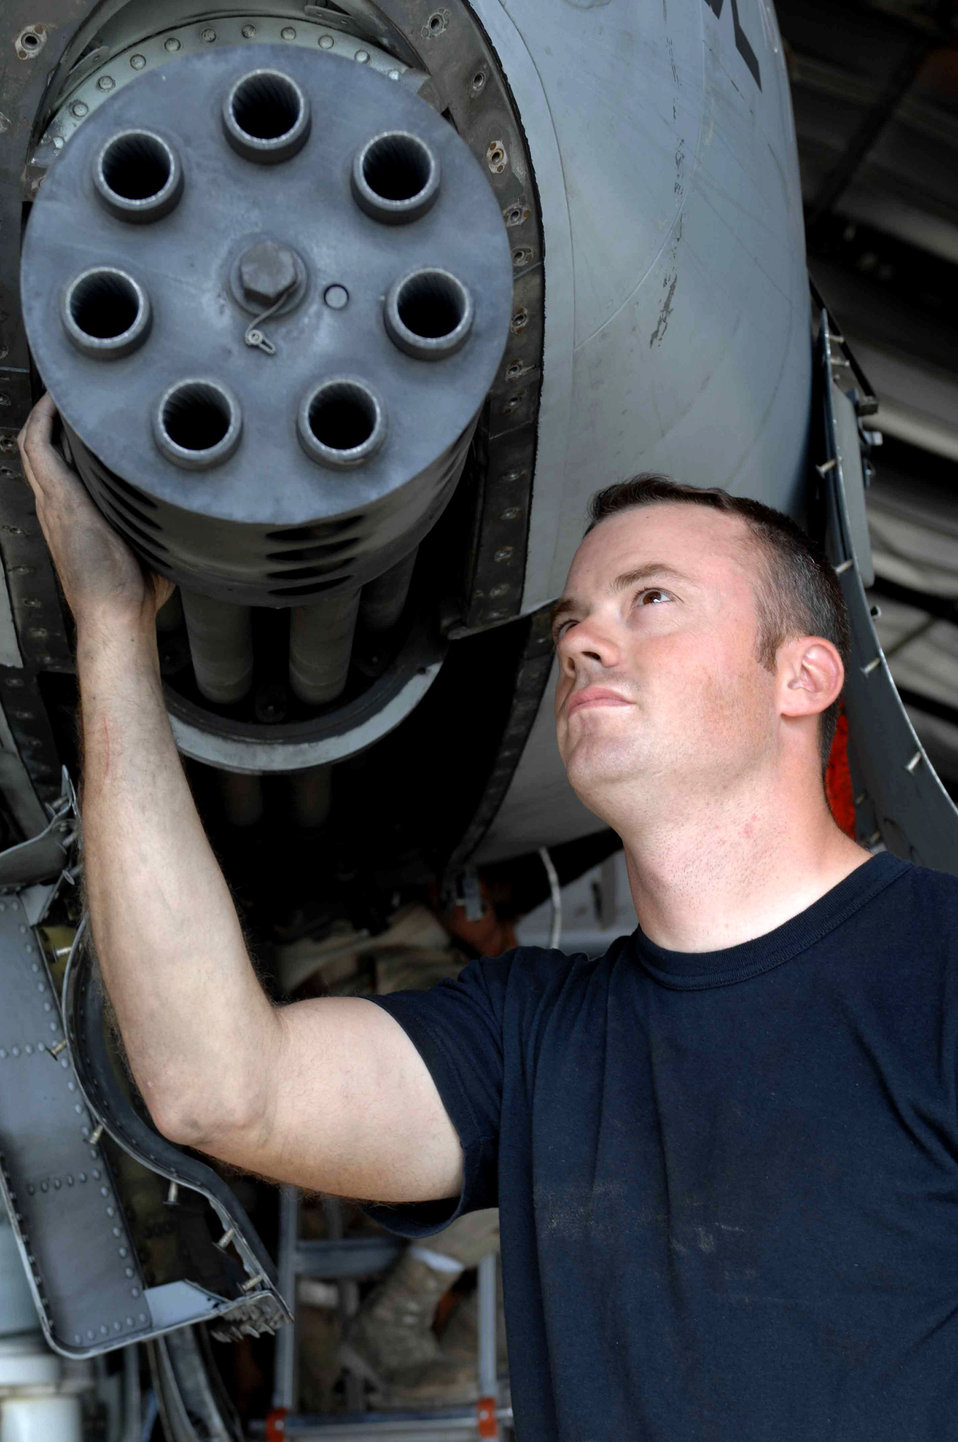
Maintenance check

Staff Sgt. Steven Means performs maintenance on an A-10 Thunderbolt aircraft at Bagram Airfield, Afghanistan Sept. 18. Sergeant Means of Baton Rouge, La., is deployed from the 355th Aircraft Maintenance Squadron, Davis-Monthan AFB, Ariz. The A-10 Thunderbolts are essential to supporting ground troops in Afghanistan.